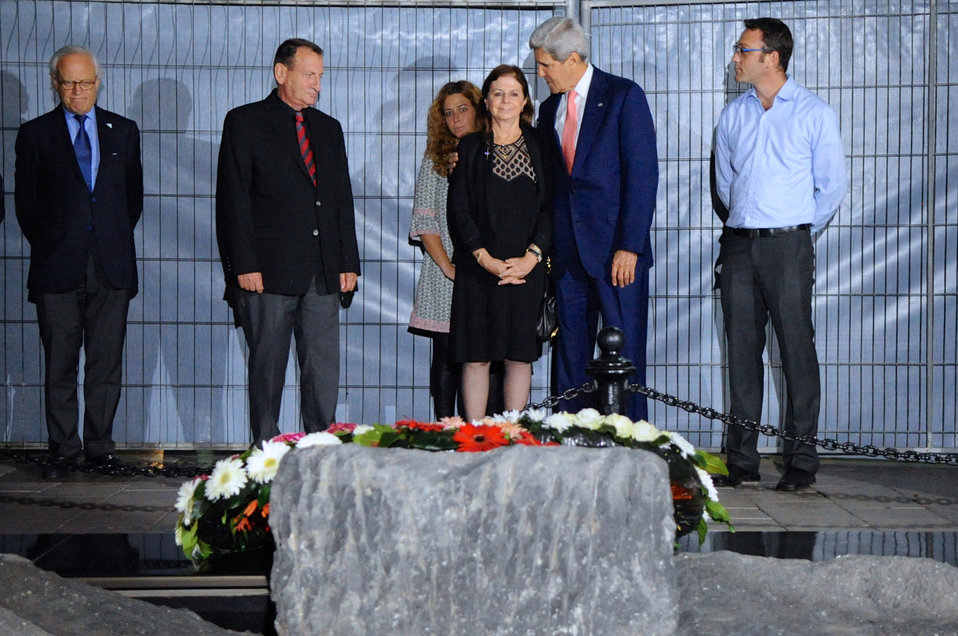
Secretary Kerry Stands With Yitzhak Rabin's Daughter at the Assassination Site

U.S. Secretary of State John Kerry hugs Yitzhak Rabin's daughter Dalia after laying a wreath at the site where the former Israeli Prime Minister was assassinated in 1995, during a stop in Tel Aviv, Israel, on November 5, 2013.